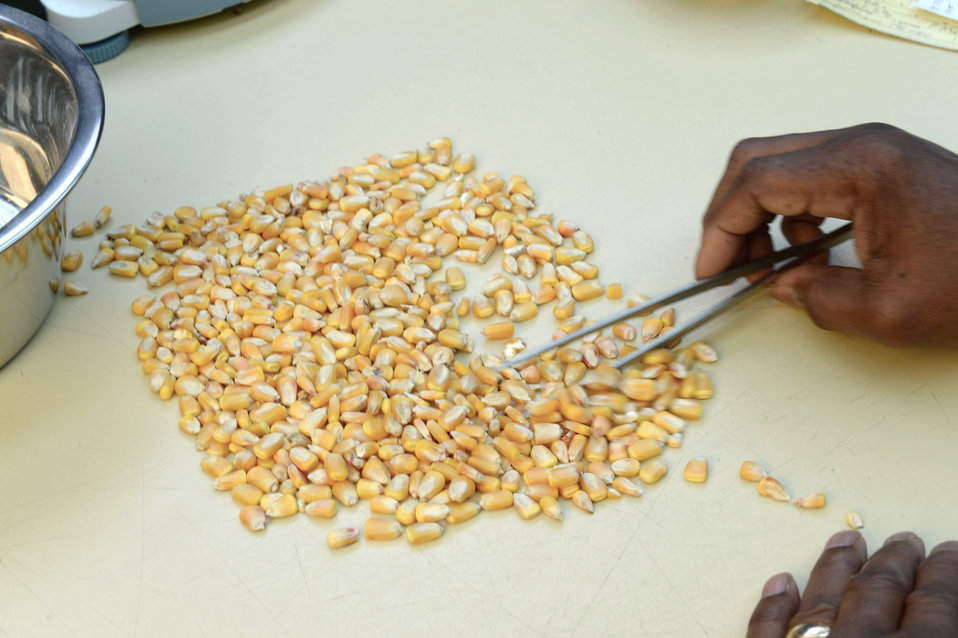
A U.S. Department of Agriculture (USDA) Grain Inspection, Packers and Stockyards Administration (GIPSA) Federal Grain Inspection Service (FGIS) scientist tests corn at the FGIS inspection laboratory in New Orleans, LA on Monday, Nov. 18, 2013.